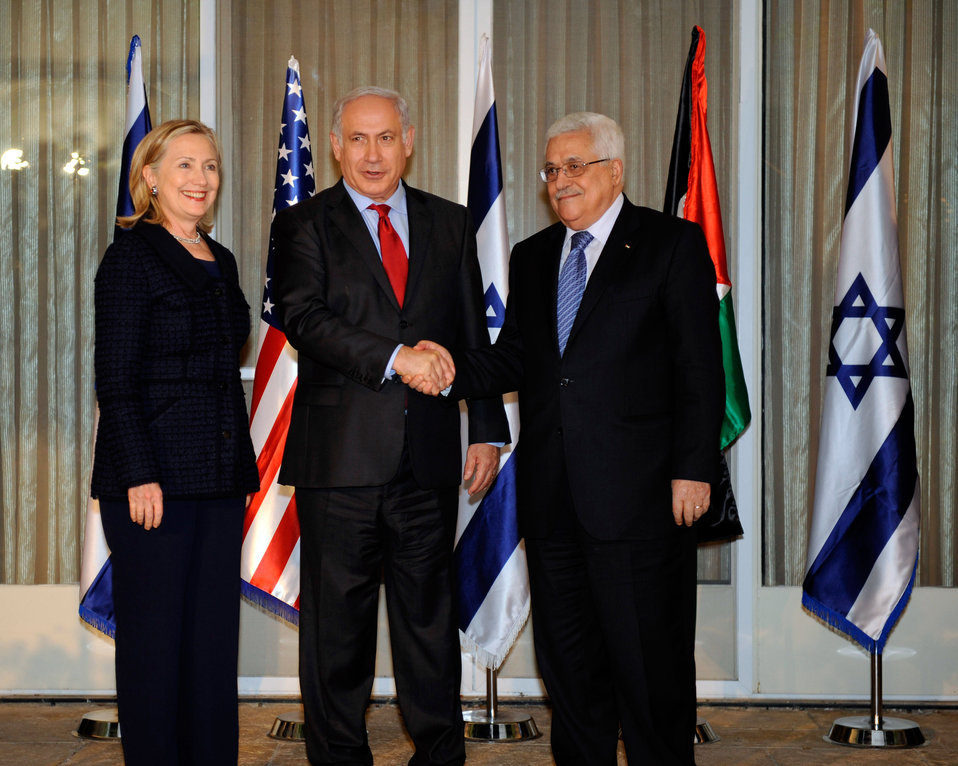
Israeli Prime Minister Netanyahu and Palestinian President Abbas Shake Hands as Secretary Clinton Looks On

Israeli Prime Minister Benjamin Netanyahu (center) shakes hands with Palestinian President Mahmoud Abbas (right) as U.S. Secretary of State Hillary Rodham Clinton (left) looks on at the Prime Minister's Residence in Jerusalem on September 15, 2010.